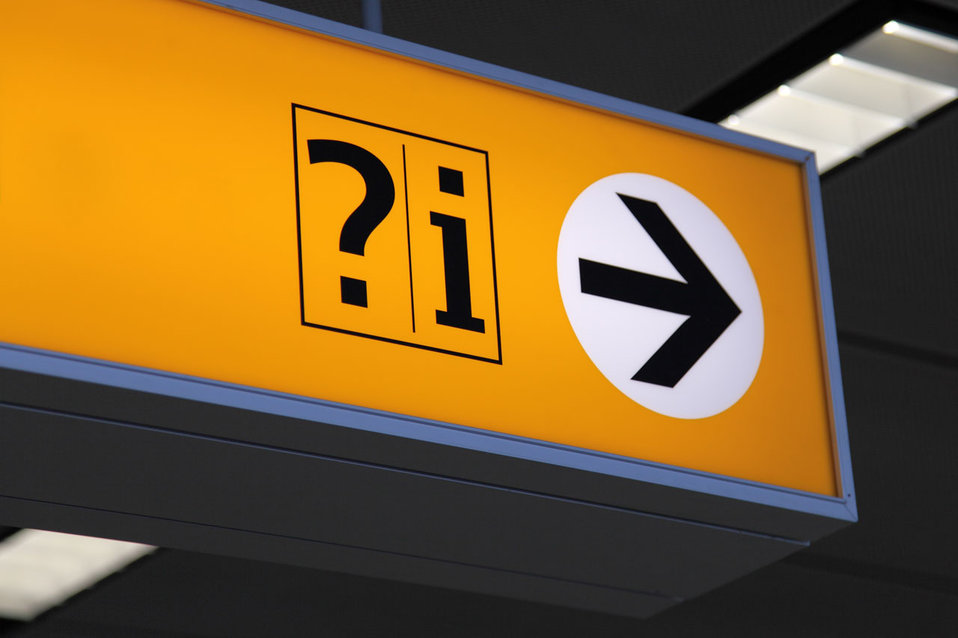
Information point this way.